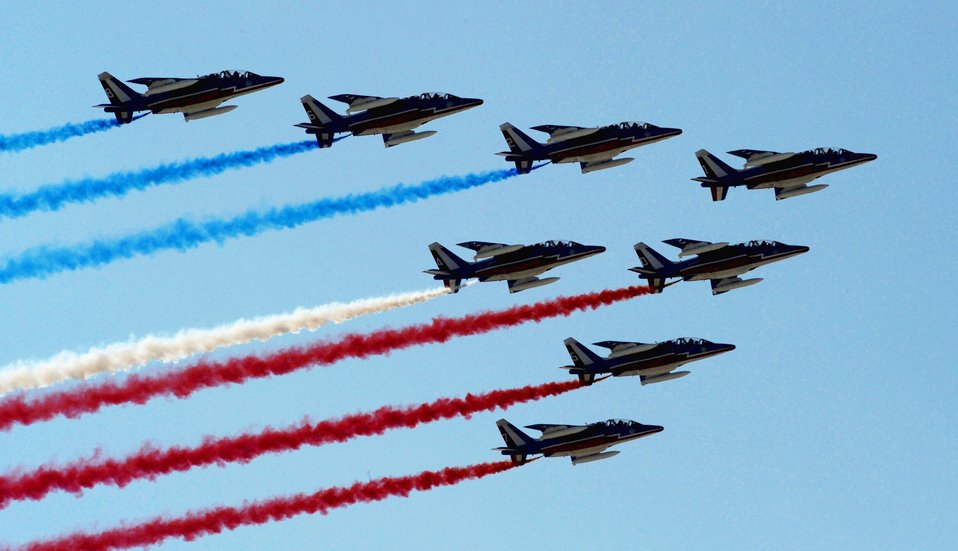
Airman, Sailors demonstrate airpower at Bahrain International Airshow

The French air force demonstration team, Patrouille de France, starts Bahrain's inaugural airshow with a flyby displaying their national colors Jan. 23, 2010.